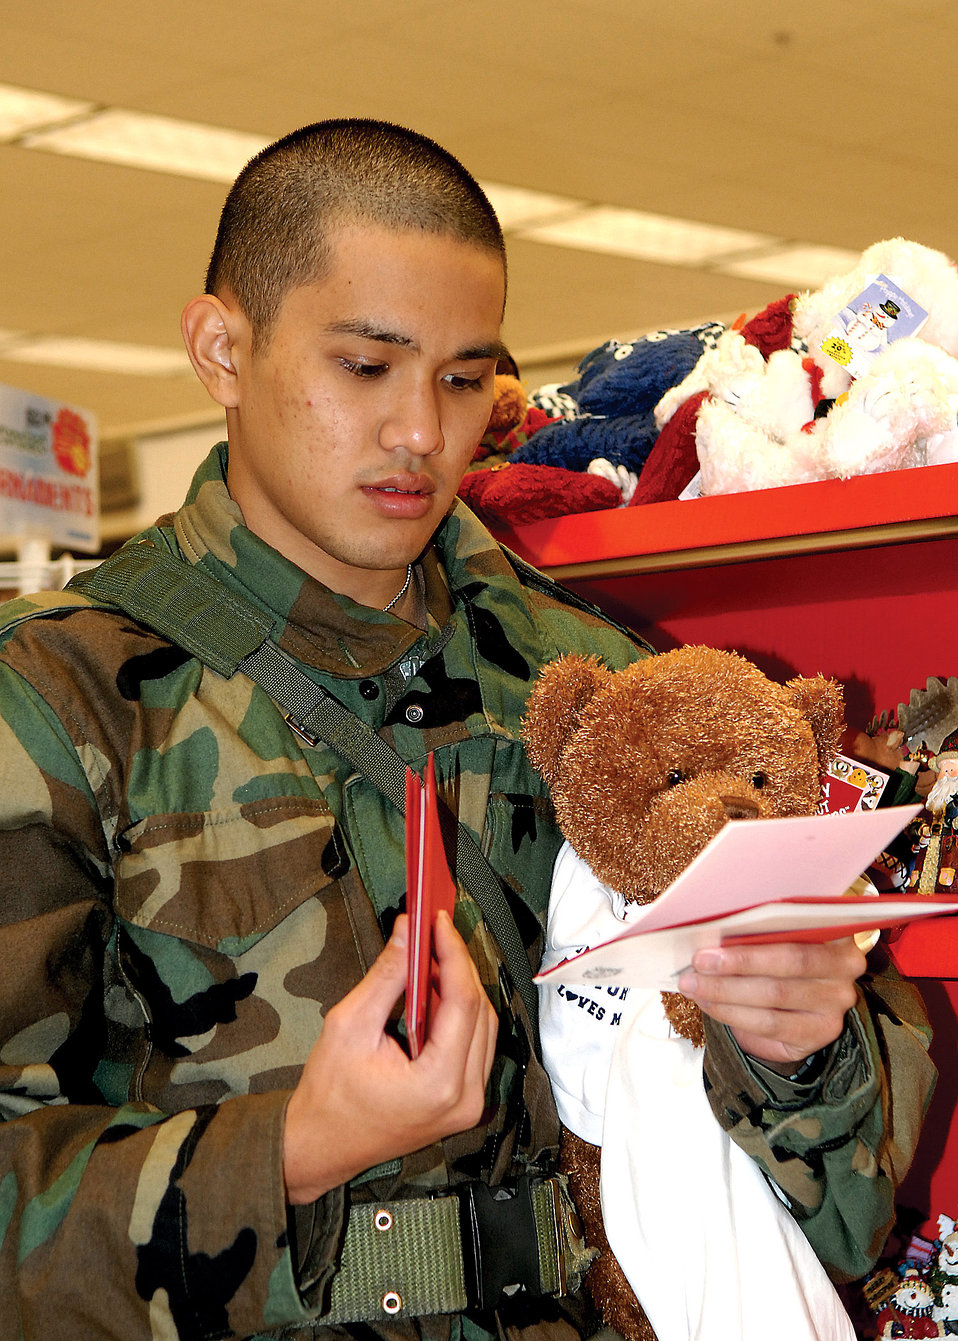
Trainees given chance to shop, ship presents

Trainee Ryan Kanasusuku selects cards and gifts Dec. 9 at the Main Exchange on Lackland Air Force Base, Texas. Under the Shop-A-Trainee program, military basic trainees in the first, second and fifth week of training, plus trainees on medical hold, were able to go to the Army and Air Force Exchange Service to purchase holiday gifts. Trainee Kanasusuku is assigned to the 324th Training Squadron.